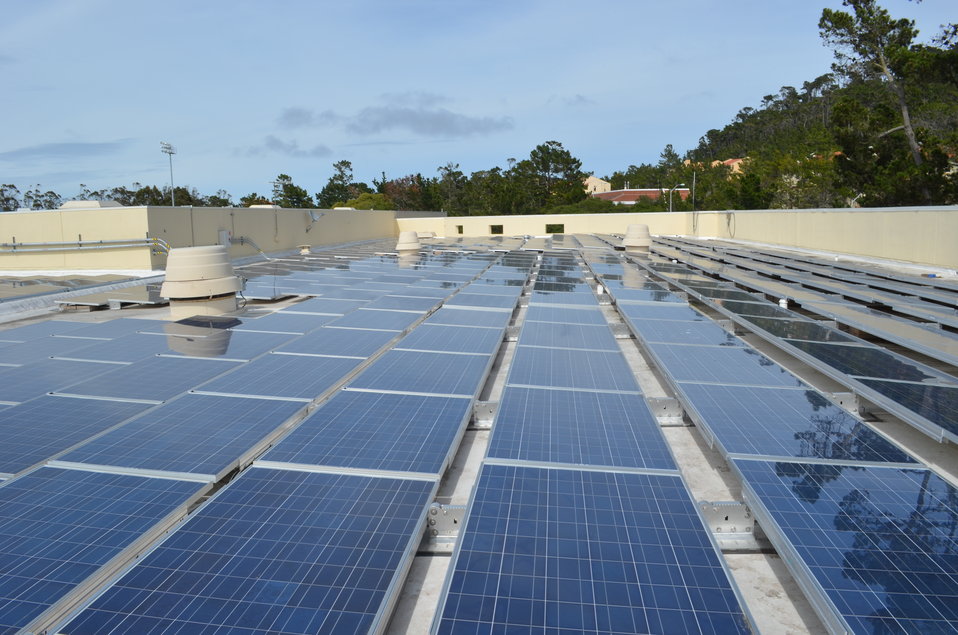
Corps manages vital projects at Presidio

Solar panels cover the roof of the fitness center at Presidio of Monterey in Monterey, Calif., May 8, 2014. Answering the Army’s call for cleaner energy, the U.S. Army Corps of Engineers Sacramento District installed the solar panels in 2012, and the $1.7 million grid-tied system sends excess energy back to the grid and can draw power during cloudy or winter months. The fitness center is the first facility at the Presidio to use net zero electrical consumption and net zero carbon emissions annually; generating 750 megawatt-hours of electricity per year and reducing energy costs by nearly $70,000 annually.